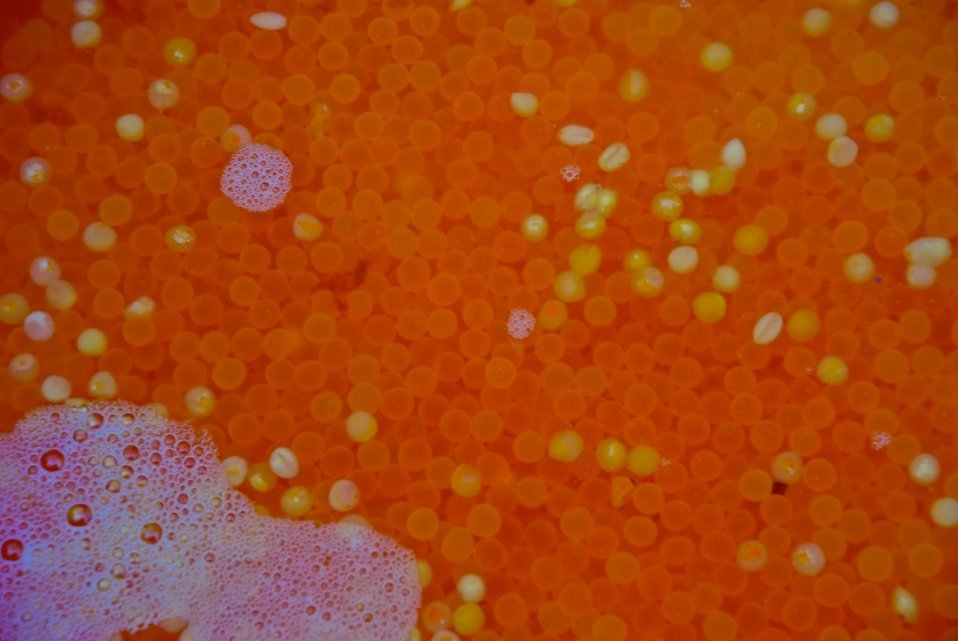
Richard Cronin National Salmon Station

Salmon eggs from the Richard Cronin National Salmon Station in Sunderland, MA.